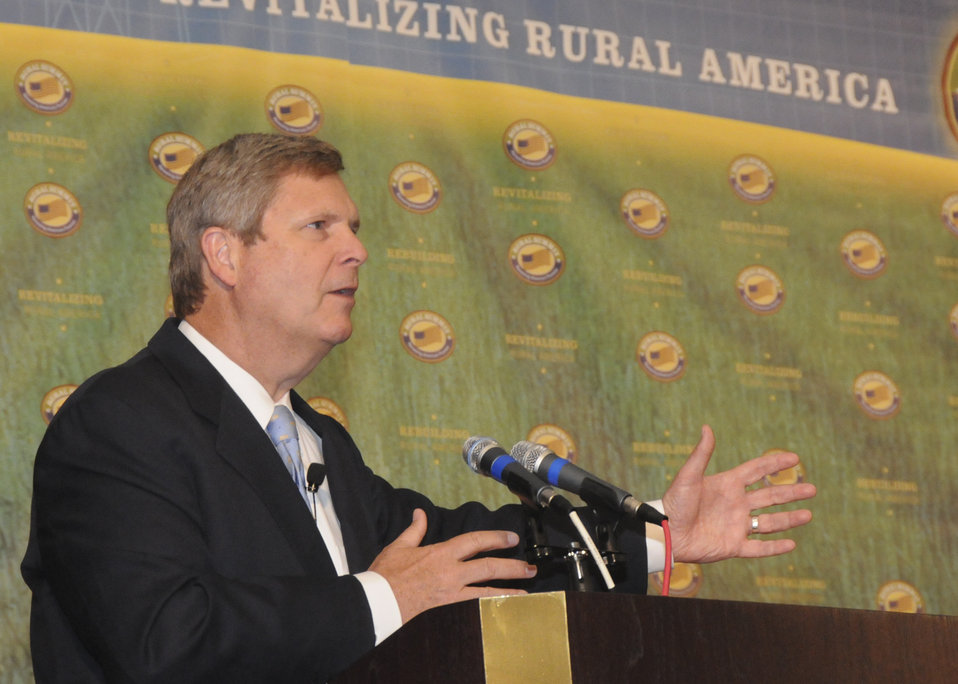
Agriculture Secretary Tom Vilsack speaks at the opening session of the National Rural Summit held at Jefferson College in Hillsboro, MO., on Thursday, June 3, 2010. USDA photo 10di1386-127